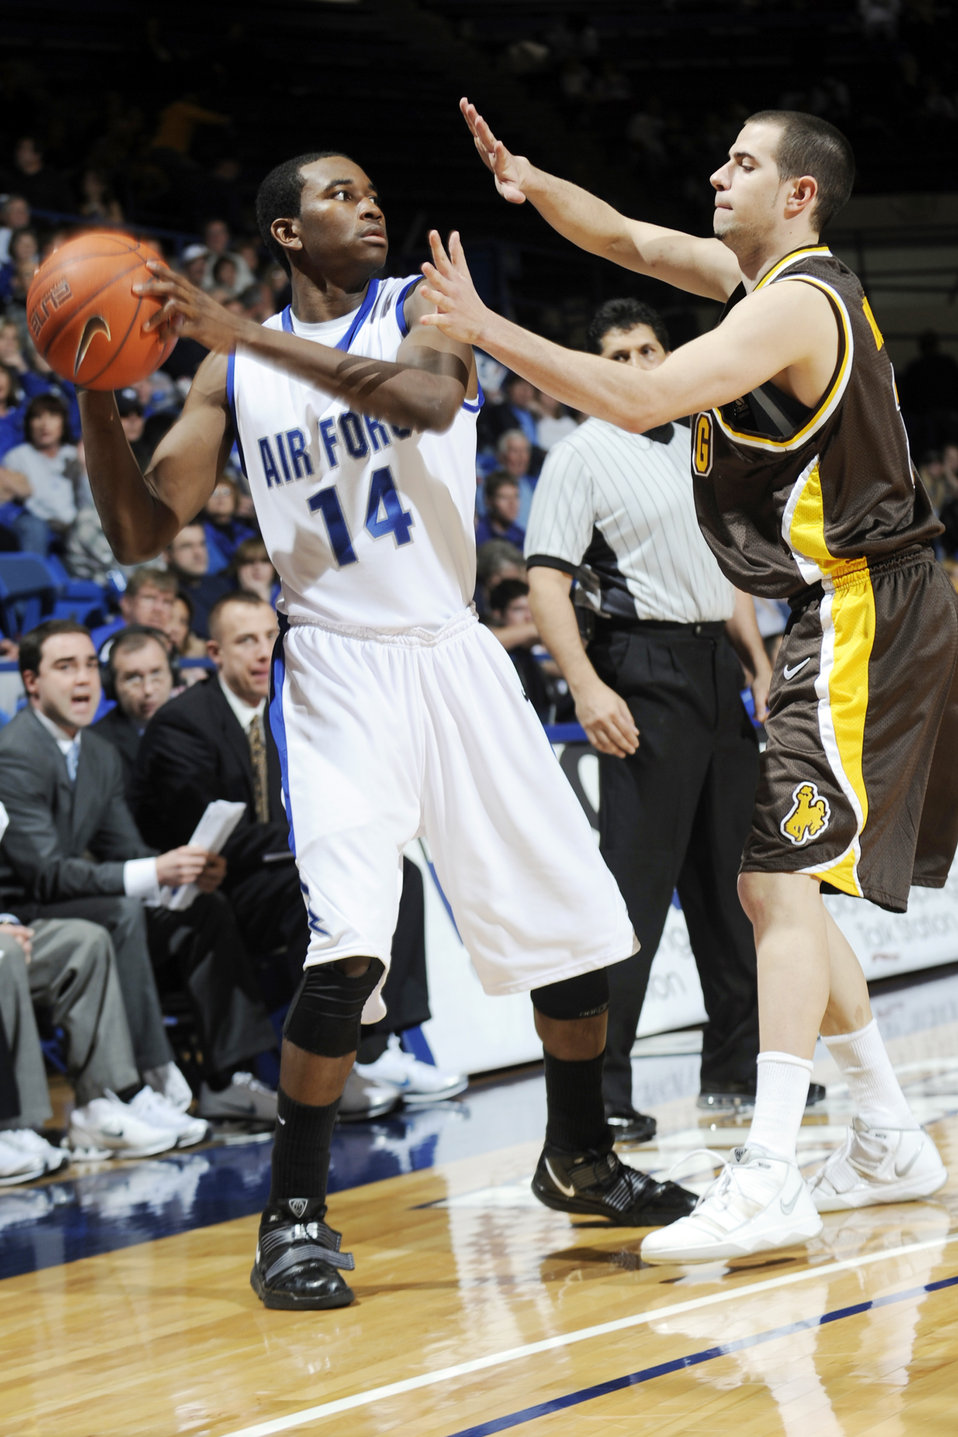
Falcons break conference streak

Academy freshman guard Michael Lyons tries to pass the ball during the Falcons game against Wyoming at the U.S. Air Force Academy's Clune Arena in Colorado Jan. 30, 2010. The Falcons won 70-63 with Lyons scoring 16 of those points. This win broke a 22-game conference losing streak; their first win in the Mountain West Conference since 2008.